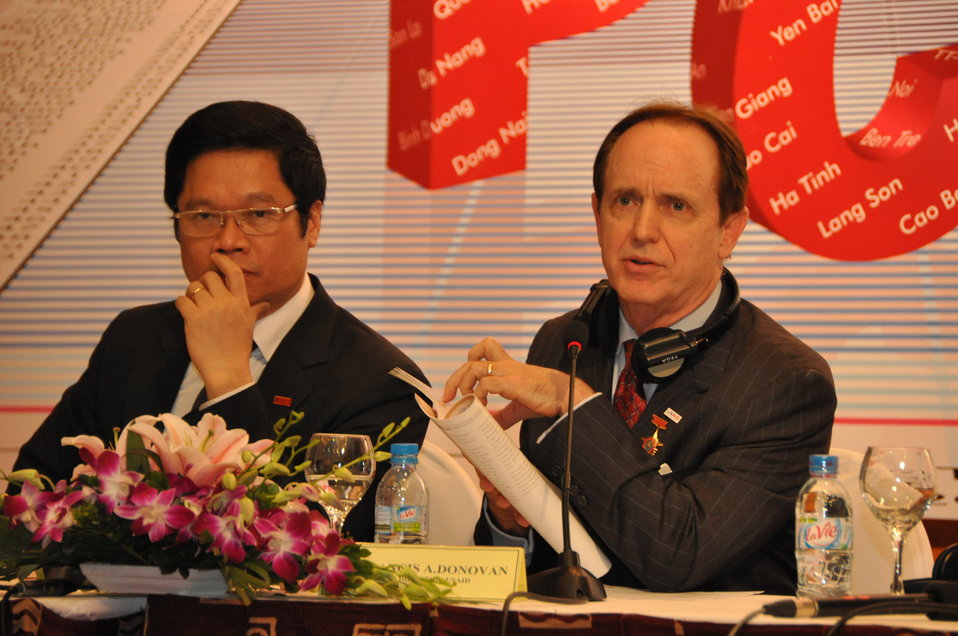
USAID Mission Director Francis Donovan at the Provincial Competitiveness Index 2011 Launch